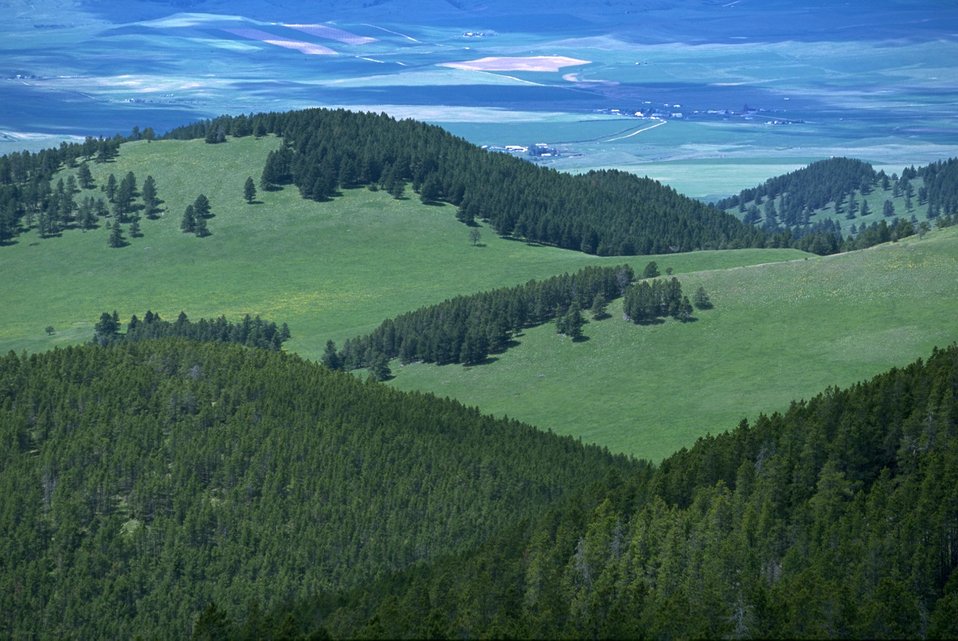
Alpine meadow in the Judith Mountains